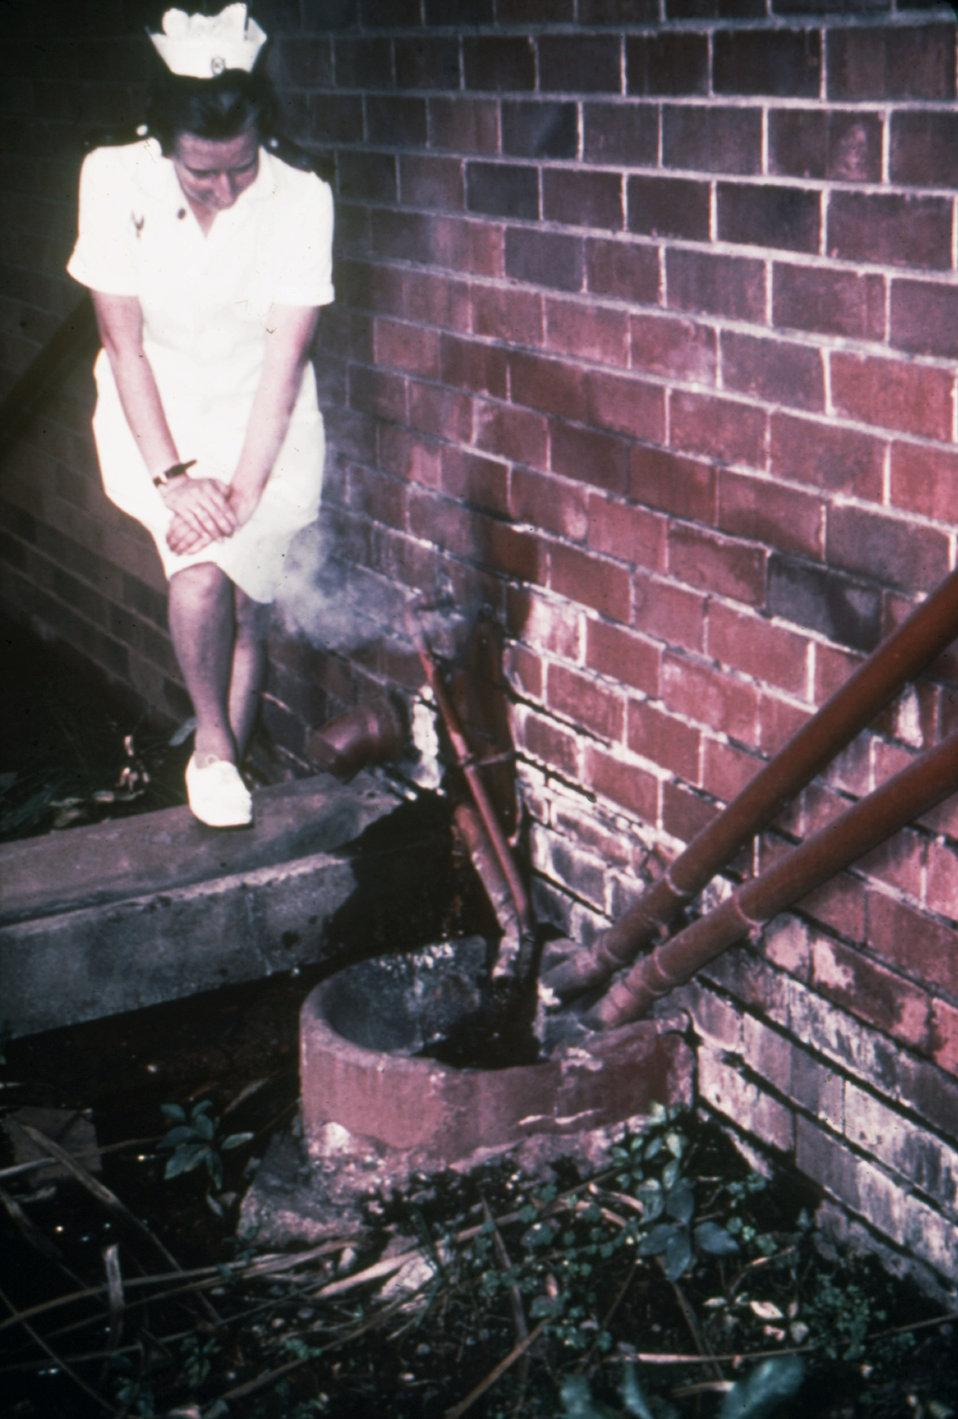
In this photograph, a nurse is shown standing near sewage pipes outside of an Infectious Disease Hospital in Johannesburg, South Africa where three patients were hospitalized with Marburg disease.